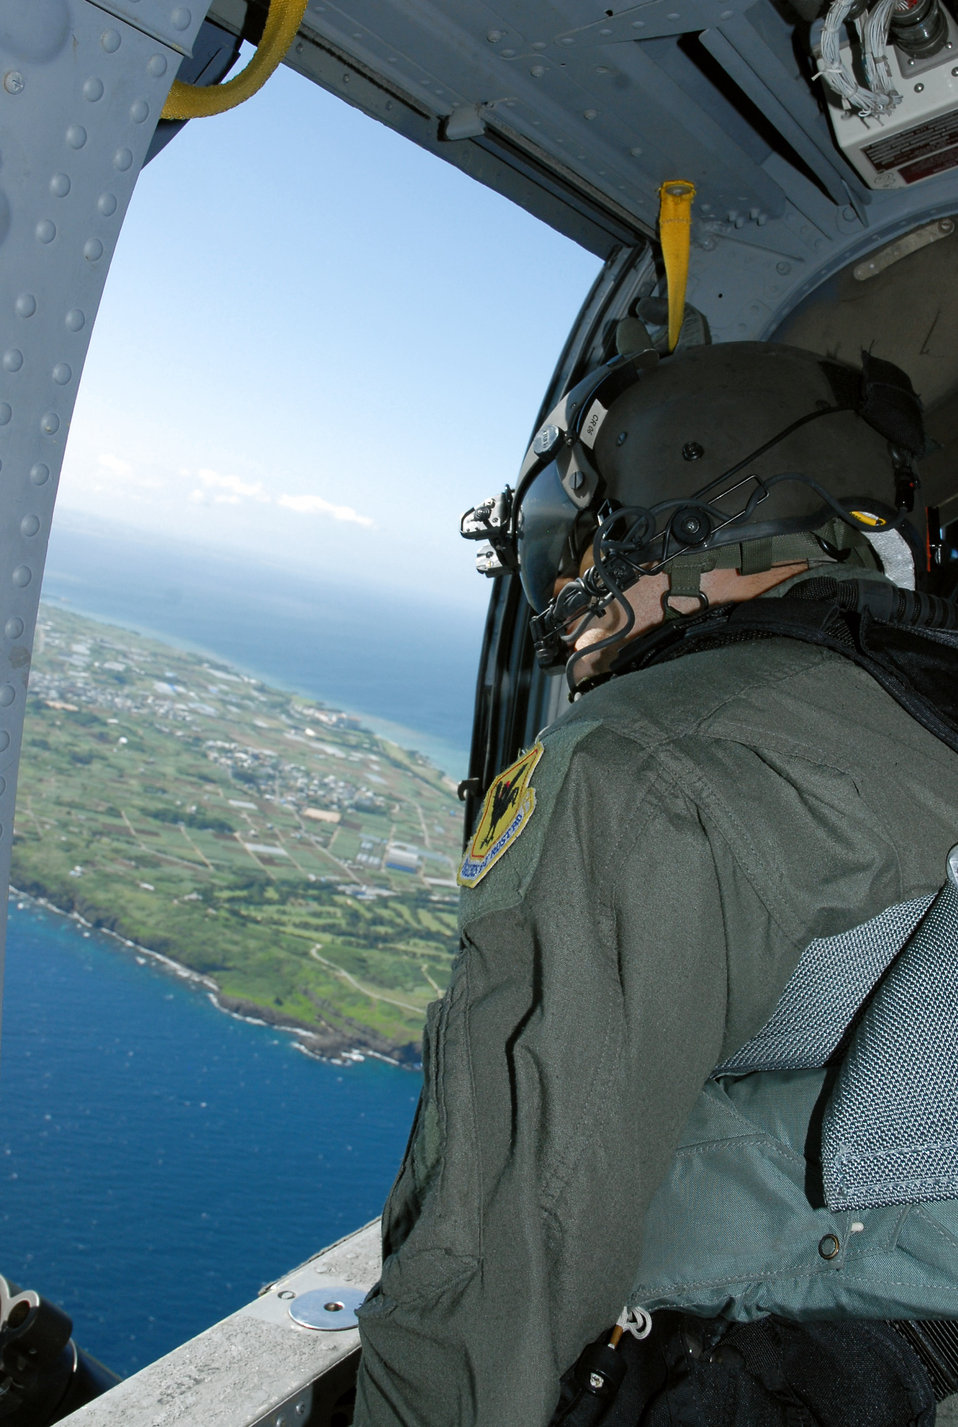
To the rescue

Staff Sgt. Justin Schramm scans the sky and water below from an HH-60G Pave Hawk prior to a crisis management exercise Oct. 8 off the coast of Okinawa, Japan. Members of the 18th Wing from Kadena Air Base, Japan, and the Japanese coast guard rehearsed response procedures for a simulated over the water aircraft accident. Sergeant Schramm is an aerial gunner assigned to the 33rd Rescue Squadron.